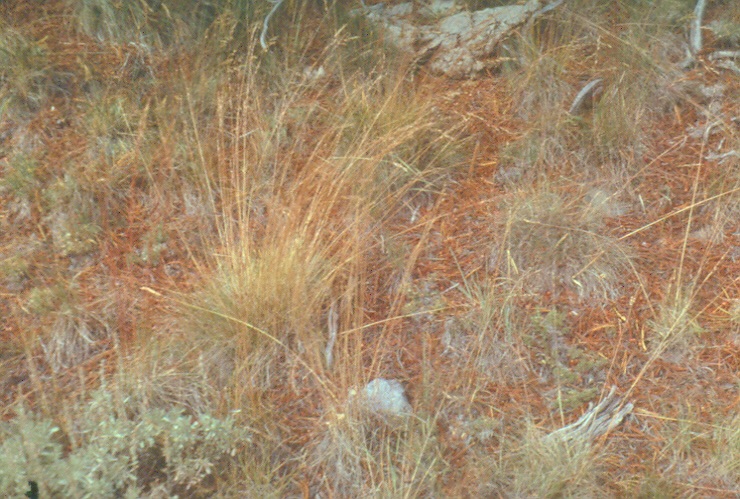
Blue Bunch Wheat Grass and Sage Brush Salmon FIeld Office UCSC Upper Columbia Salmon Clearwater District